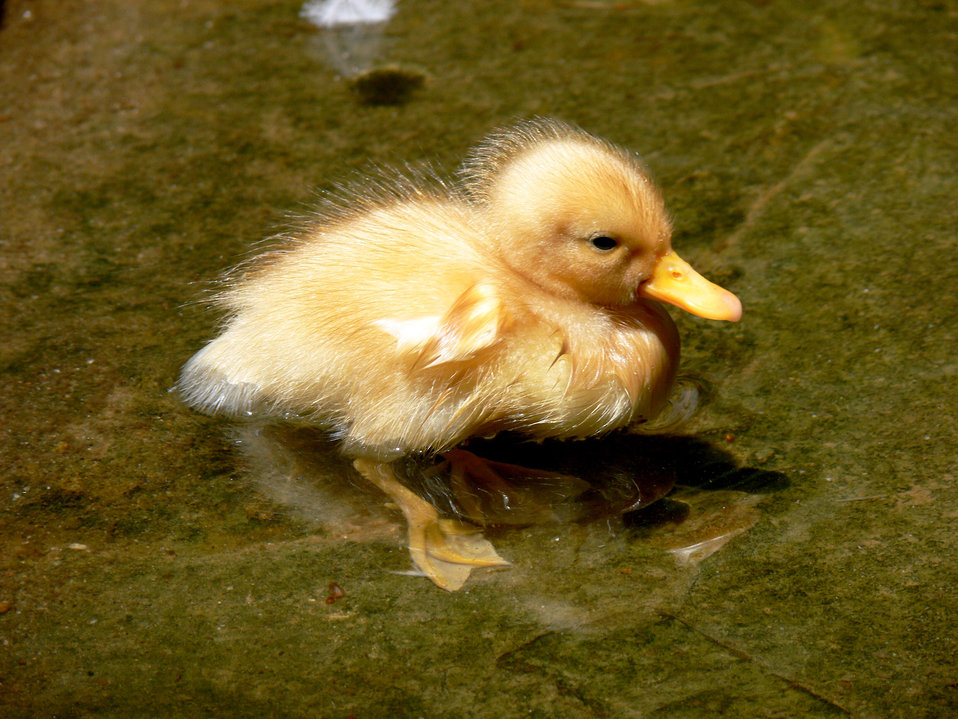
Yellow duckling

Tiny yellow duckling swimming in pond.